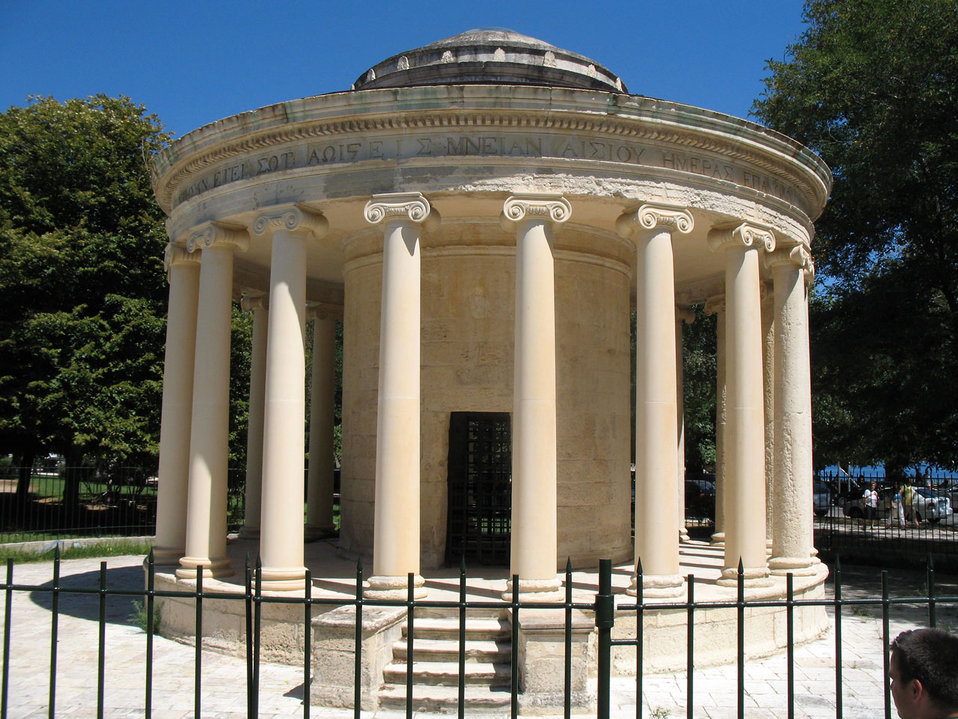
Greek temple

Small greek temple in corfu.